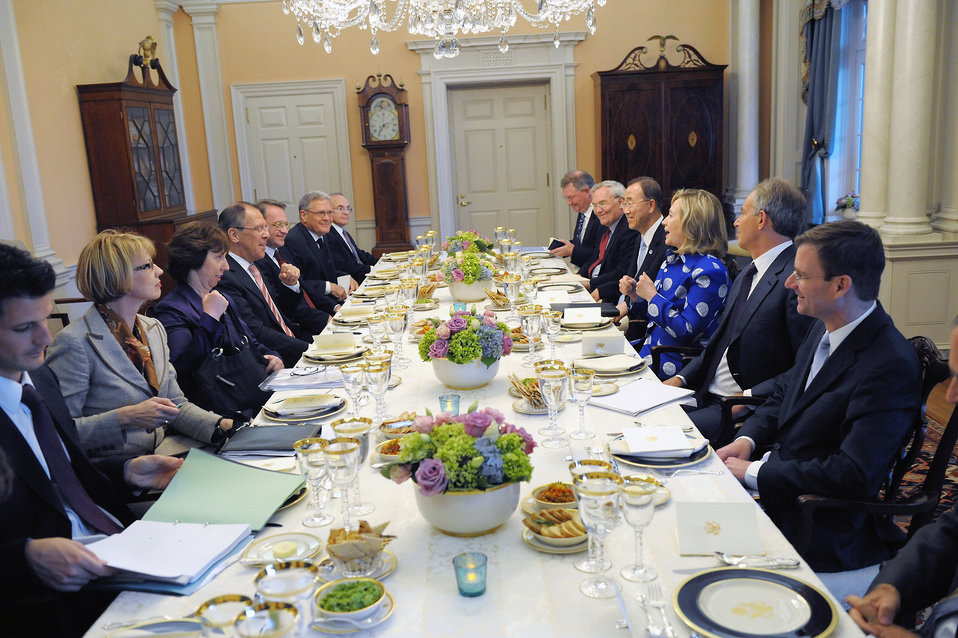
Secretary Clinton Hosts a Working Dinner With UN Secretary General Ban Ki-Moon, Russian Foreign Minister Lavrov, EU High Representative Ashton, and Quartet Representative Blair

U.S. Secretary of State Hillary Rodham Clinton hosts a working dinner with UN Secretary General Ban Ki-Moon, Russian Foreign Minister Lavrov, EU High Representative Ashton, and Quartet Representative Tony Blair at the U.S. Department of State in Washington, D.C., on July 11, 2011.